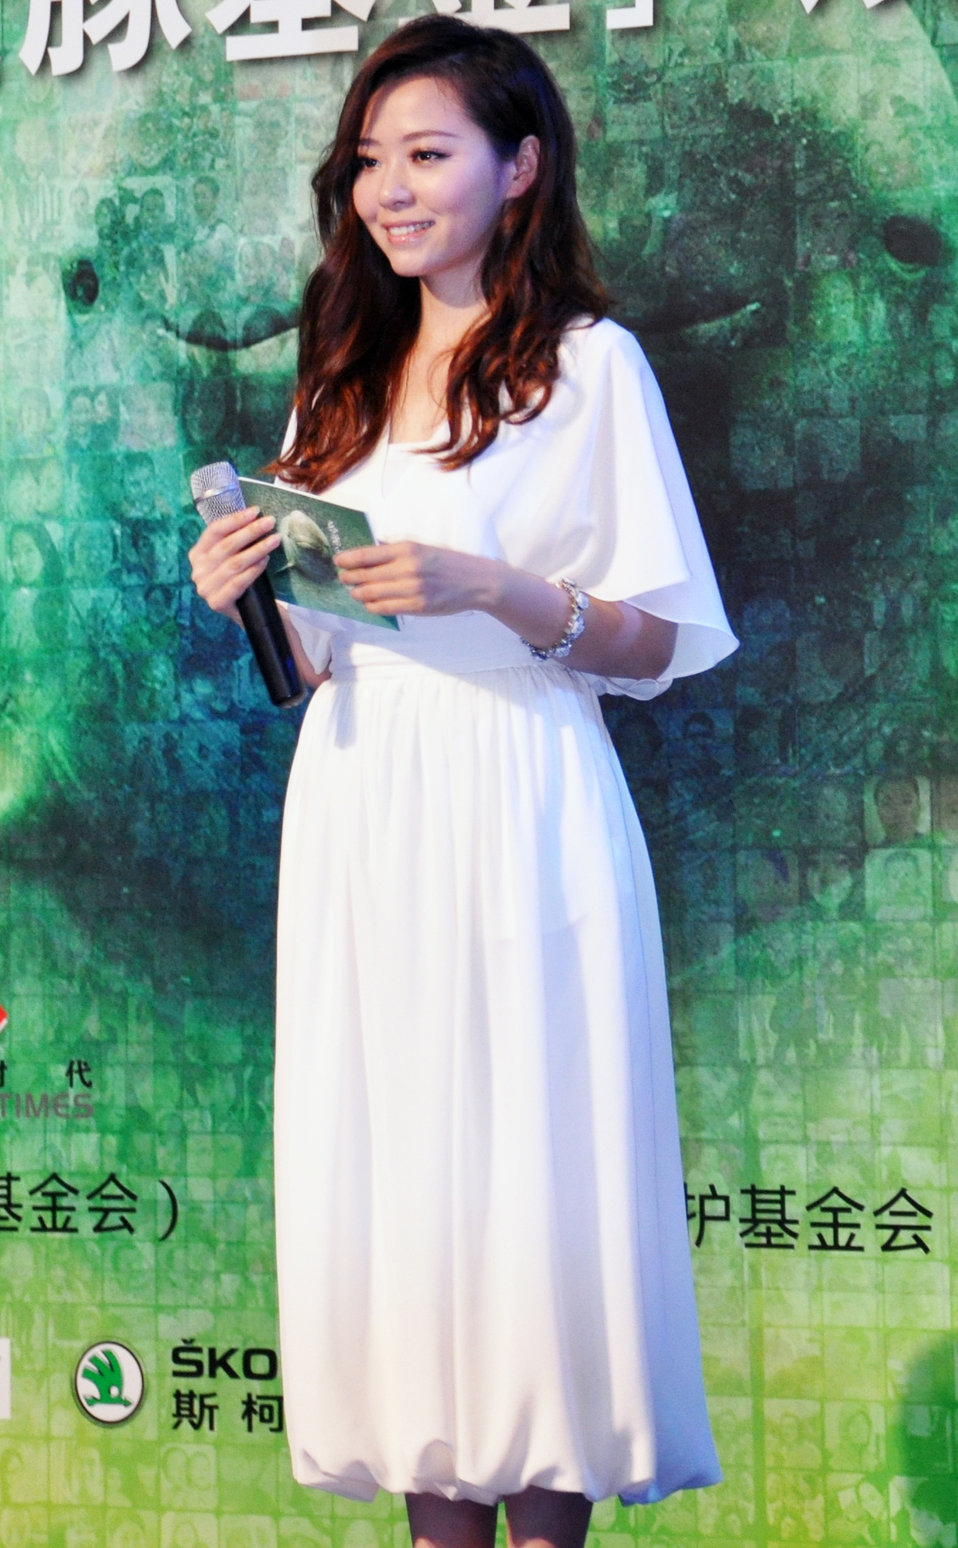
A photo of Jane Zhang 中文: 歌手张靓颖